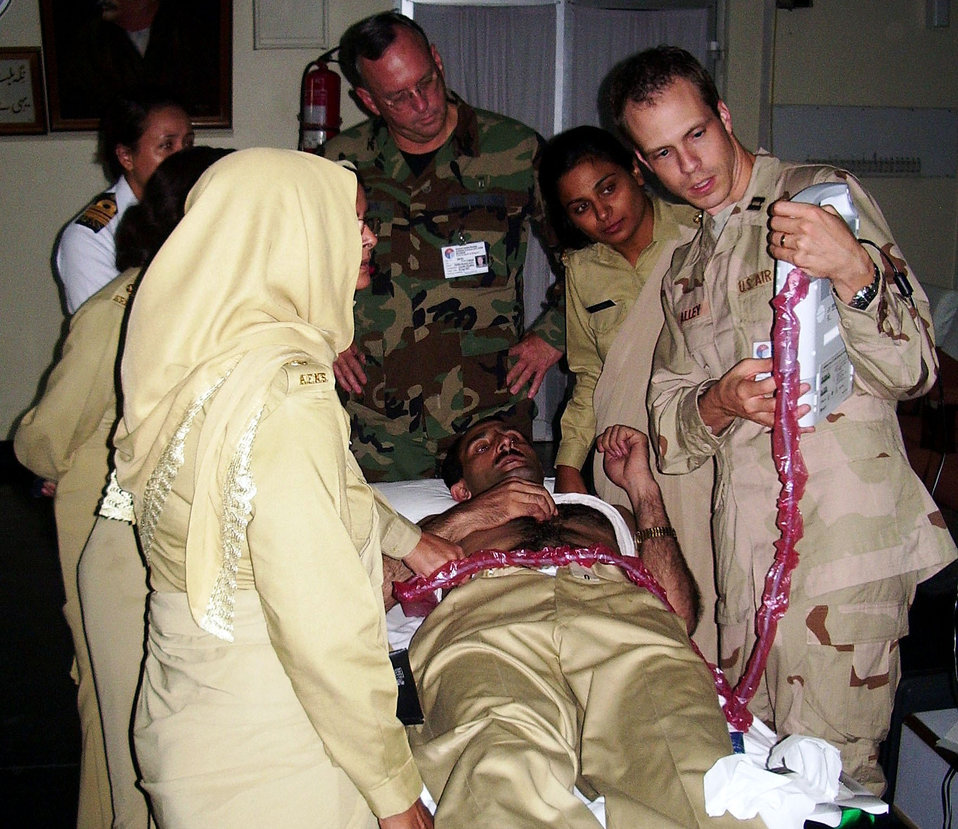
Air Force doctors train Pakistanis in battlefield surgery

Capt. (Dr.) Josh Alley (right) teaches Pakistani nurses how to use ultrasound for trauma patients, as Lt. Col. (Dr.) William Brian Perry looks on. Three doctors from the 59th Medical Wing recently served as volunteer instructors for a five-day medical course in Rawalpindi, Pakistan, to teach host nation medical professionals advanced surgery techniques for trauma patients either from natural disasters or war. Captain Alley is a general surgeon from Wilford Hall Medical Center. Todd Rasmussen)